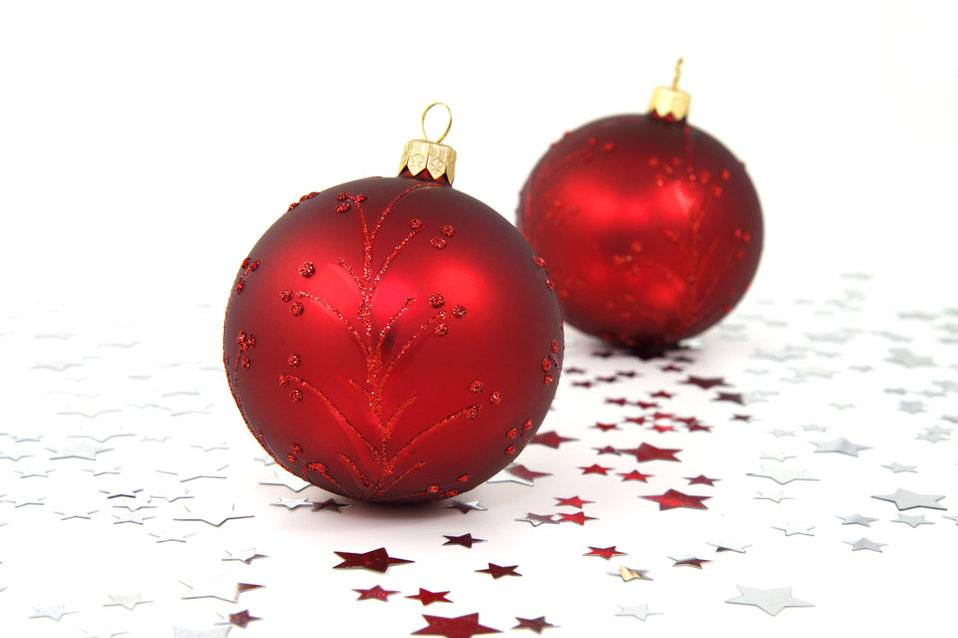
Christmas baubles

Two red christmas baubles with silver stars on the floor.